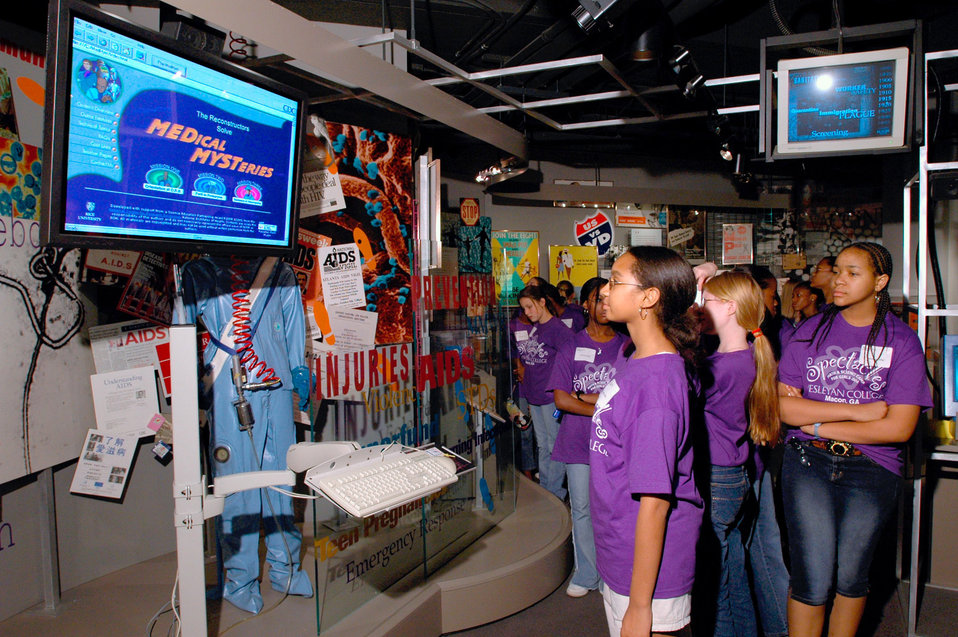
This photograph showed a number of students from Wesleyan College, located in Macon, Georgia, as they were touring the Center for Disease Control's (CDC) historical exhibits found in the Global Health Odyssey (GHO) Museum, in its previous location on the organization's Roybal Campus, Building 1. The GHO is still located on the Roybal Campus in Atlanta, Georgia, but is now situated in the new Tom Harkin Global Communications Center. The exhibit area features permanent and changing exhibitions that focus on a variety of public health topics, as well as the history of CDC. The exhibits in the GHO are self-guided and require no advance reservations. Additional curriculum-based exhibits and programming will be added in the future.